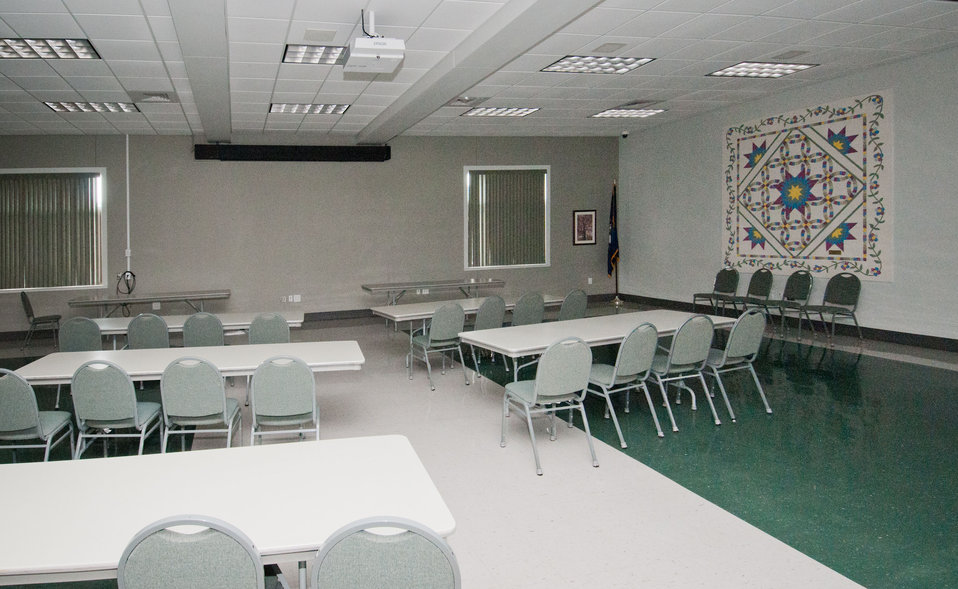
Multi-purpose room in the Education Center of the Bath County Agricultural Education and Marketing Center, Owingsville, KY, on Friday, July 15, 2011. The Center was the recipient of a $400,000 Rural Business Enterprise Grant. It has given farmers and producers from Bath and surrounding counties the opportunity to manufacture and market their locally grown and locally produced value-added and “Kentucky Proud” branded products, including but not limited to, fresh produce, artisan crafts and specialty food products. The Center is open year-round and allow residents to sell products in four different retail categories, including Kentucky products, regional crafts, “green” groceries and bakery/deli. Several producers expressed their gratitude for Rural Development’s assistance in making the center a reality. The project was made possible through American Recovery and Reinvestment Act of 2009 funding enacted by the 111th United States Congress in February 2009 and signed into law on February 17, 2009, by President Barack Obama.